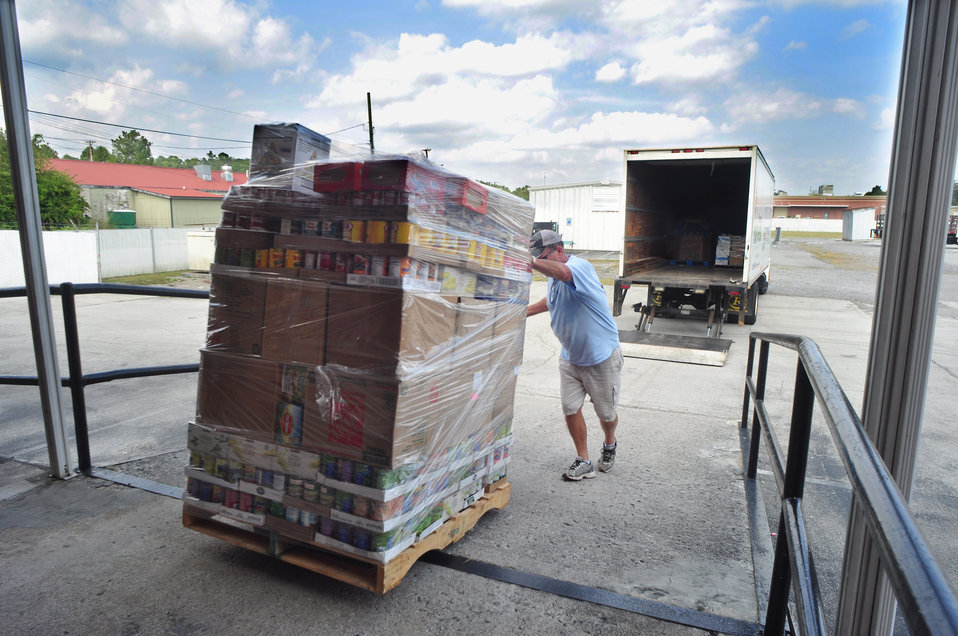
DOE ORO Feds Feed Famlies Food Drive for Second Harvest

13-115b 13-115a DOE photo Lynn Freeny 9-19-2013 Oak Ridge Tennessee